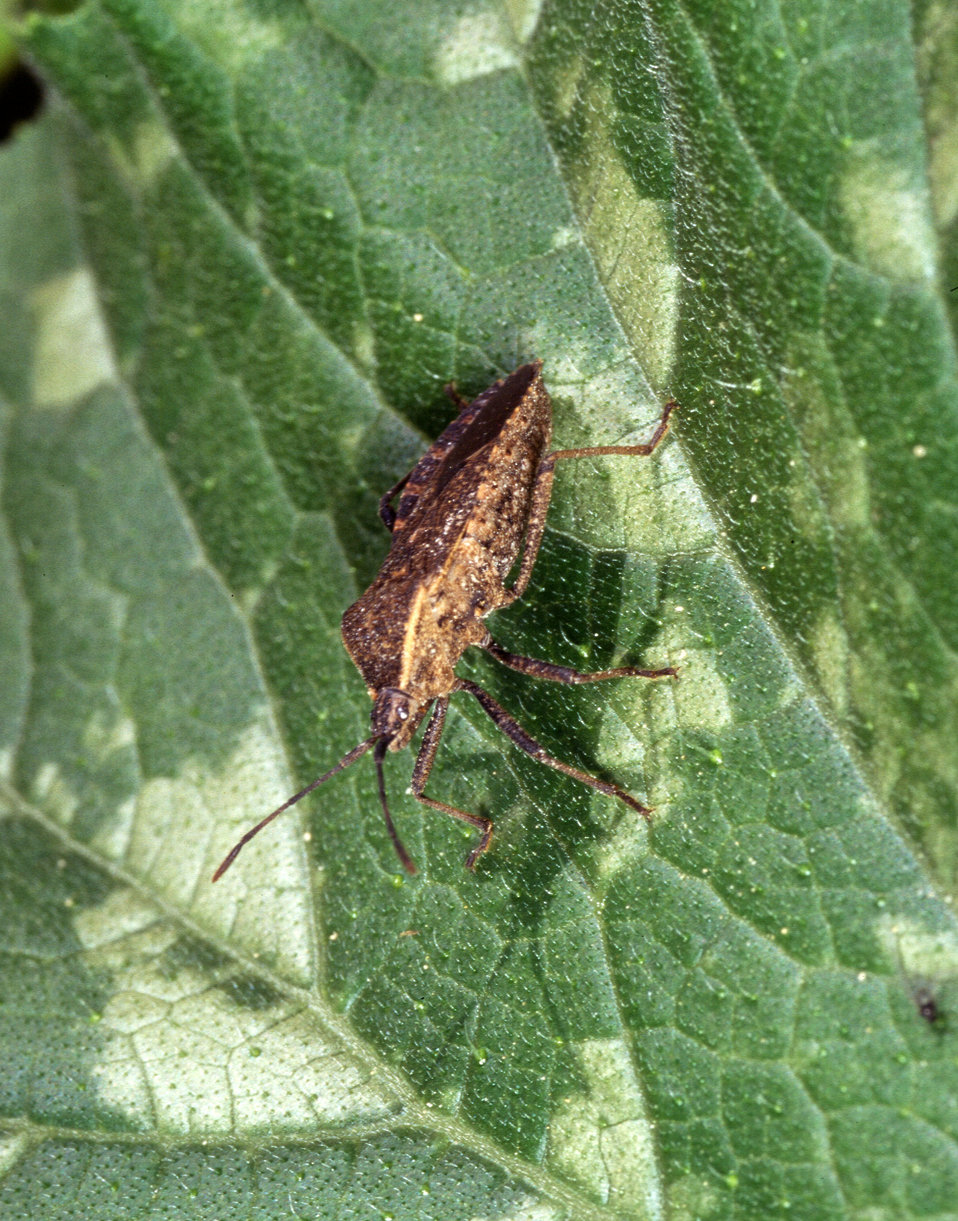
The Squash bug is an agricultural pest found from Canada into Central America and throughout the U.S. These bugs attack squash, pumpkin, cucumber, and melon, in that order as well as Hubbard, winter, and marrow squash are often heavily infested.